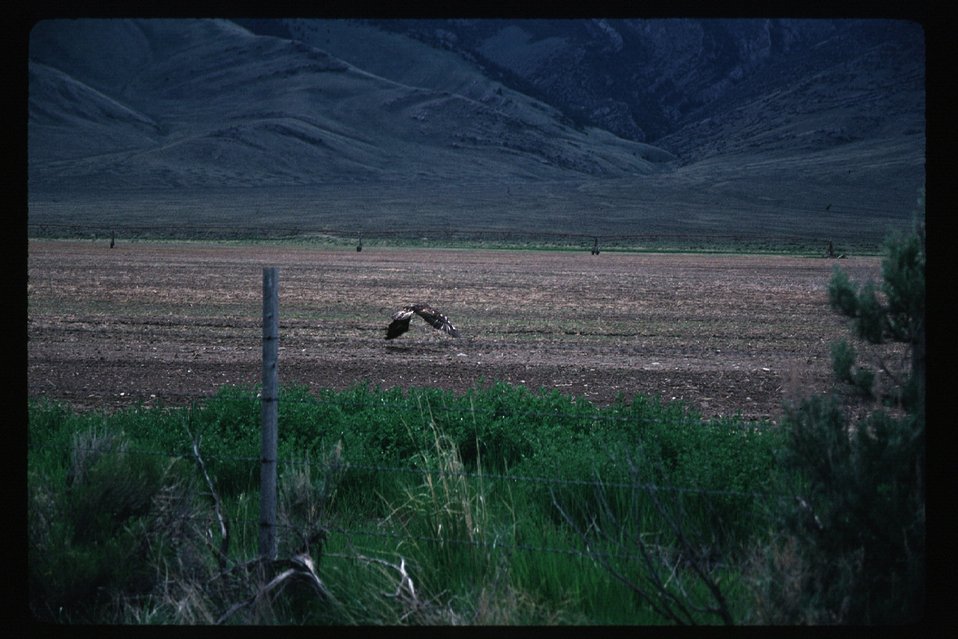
Wet Creek riparian project Idaho Falls Field Office USRD Upper Snake River District